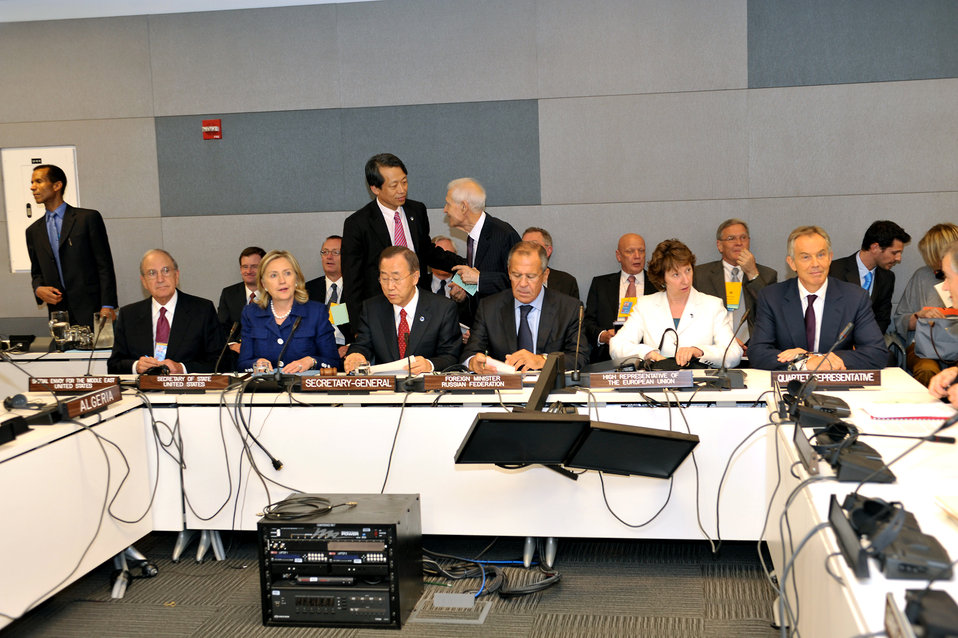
Secretary Clinton Participates in the Quartet Follow-on Meeting with the Arab League Committee

U.S. Secretary of State Hillary Rodham Clinton participates in the Quartet Follow-on Meeting with the Arab League Committee at the United Nations in New York, New York, on September 21, 2010.On the left of the Secretary is U.S. Special Envoy for Middle East Peace George J. Mitchell, and to the right of the Secretary are UN Secretary General Ban Ki-Moon, Russian Foreign Minister Sergey Levrov, EU High Representative Catherine Ashton, and Quartet Representative Tony Blair.